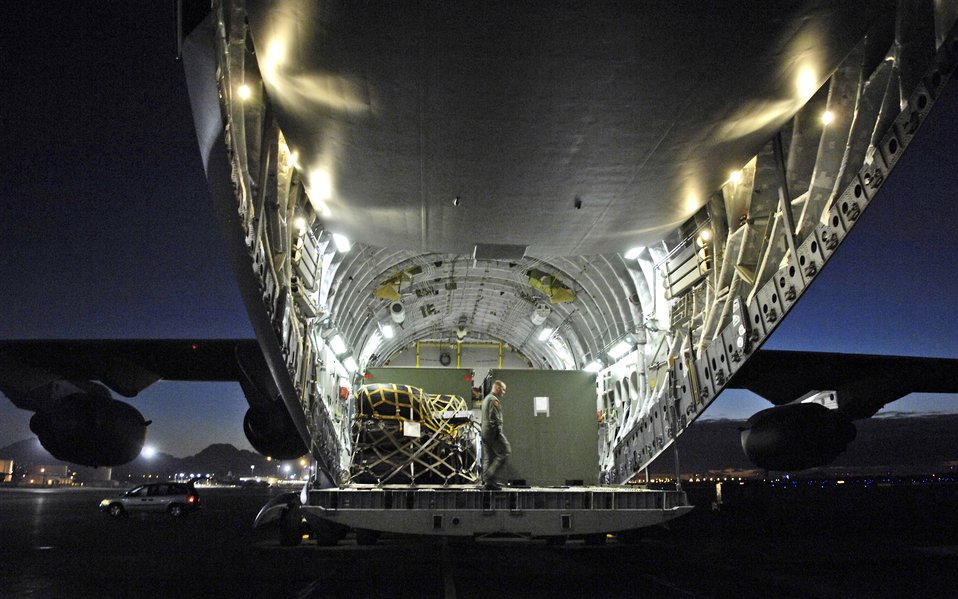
Final check

Staff Sgt. Jason Scaffidi conducts a final check of equipment loaded on a C-17 Globemaster III Jan. 25 prior to its departure from Hickam Air Force Base, Hawaii. Sergeant Scaffidi is a loadmaster with the 535th Airlift Squadron.